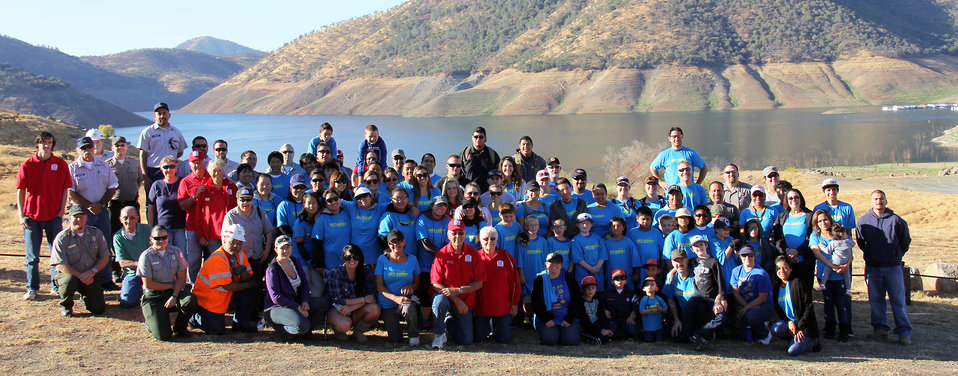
NPLD 2013 USACE Sacramento District

Volunteers smile for the camera before heading out to work on a host of projects during National Public Lands Day, Sept. 28, 2013, at Pine Flat Lake near Piedra, Calif. Pine Flat Lake is operated by the U.S. Army Corps of Engineers Sacramento District.